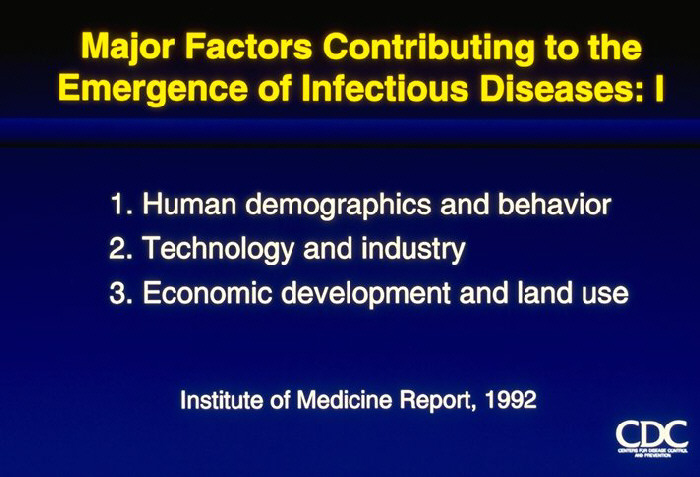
Major Factors Contributing to the Emergence of Infectious Diseases: I